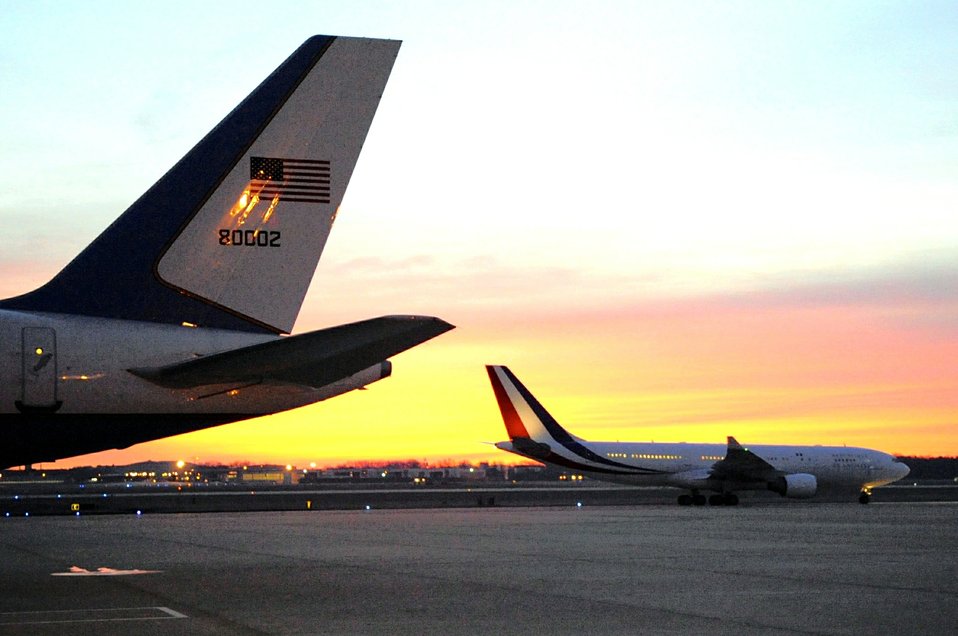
French President Hollande's Plane Taxis Into Position at Andrews Air Force Base

The plane set to carry French President Francois Hollande away from Washington, D.C., after a state visit taxis into position at Andrews Air Force Base on February 12, 2014.